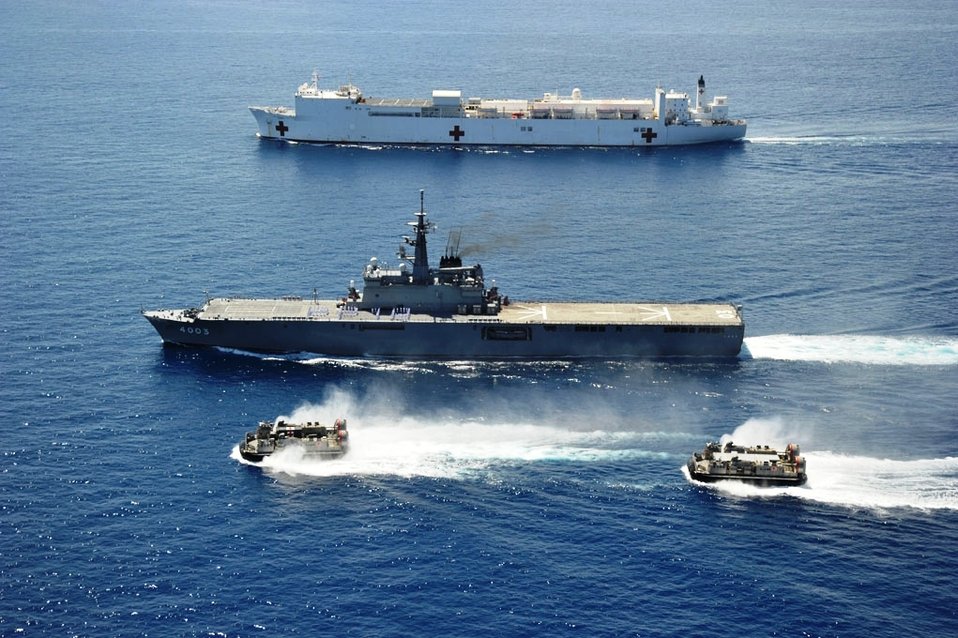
JDS Kunisaki and USNS MERCY Sail

The JDS Kunisaki, front, and the USNS MERCY, back, sail on the Pacific Ocean off the coast of Southeast Asia on June 14, 2010.